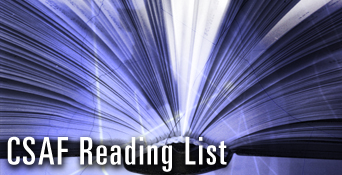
Chief of Staff Reading List

Continued education is a crucial part of being a professional warrior. The books selected for the 2009 reading list offer a perspective to tackle the challenges of today and tomorrow.